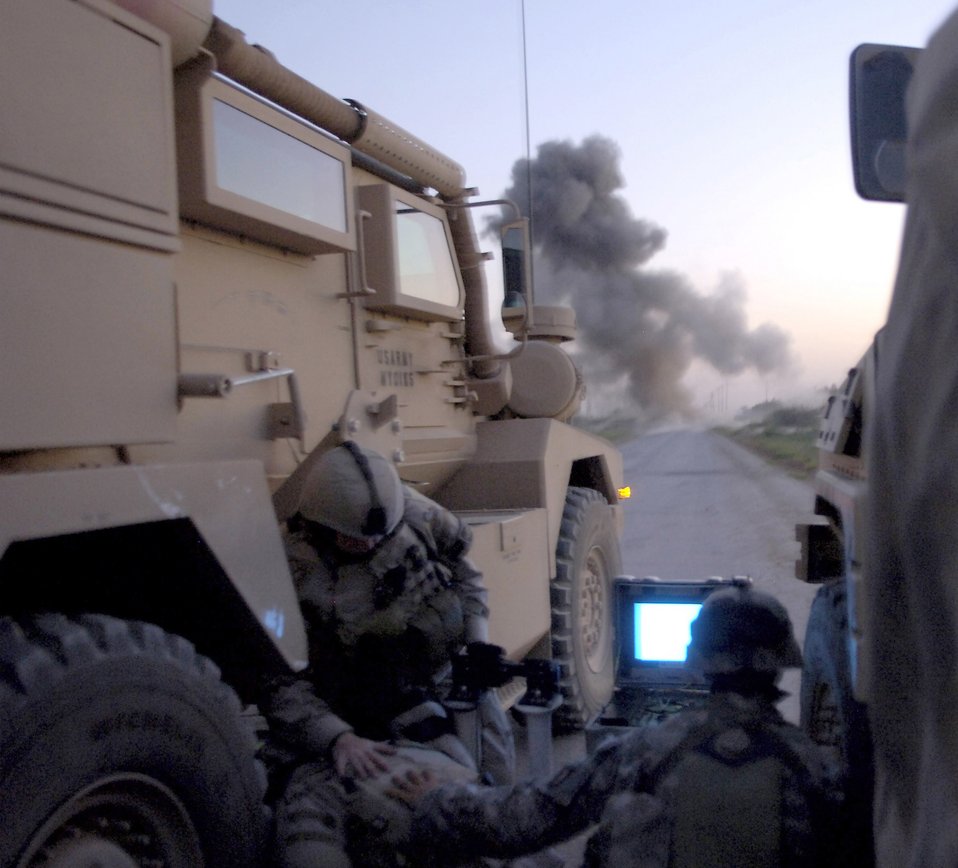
Take cover

Airmen seek cover as an improvised explosive device, or IED, is detonated at a location southwest of Baghdad, Iraq. Explosive ordnance disposal technicians were called to the scene when an Army infantry unit discovered a wire protruding from a mound in the middle of a road.